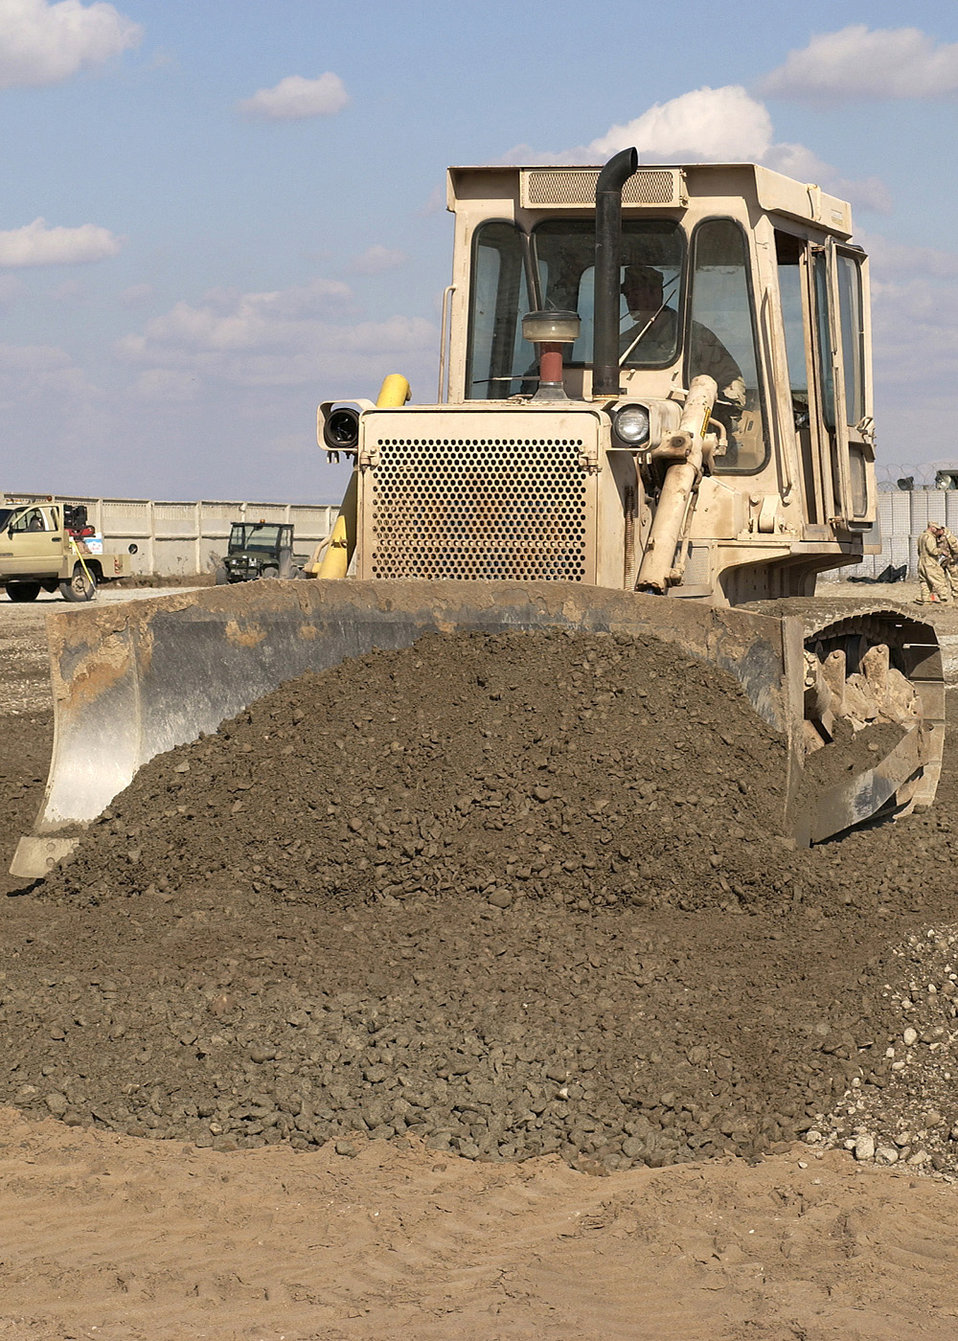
'Dirt Boyz' digging in

MANAS AIR BASE, Kyrgyzstan -- Staff Sgt. Todd Gauthier spreads construction grade materials at the fuels farm construction site here. Sergeant Gathier and other Airmen of the 376th Expeditionary Civil Engineer Squadron will move more than 63 million pounds of dirt by the end of the project. He is deployed from Ellsworth Air Force Base, S.D.